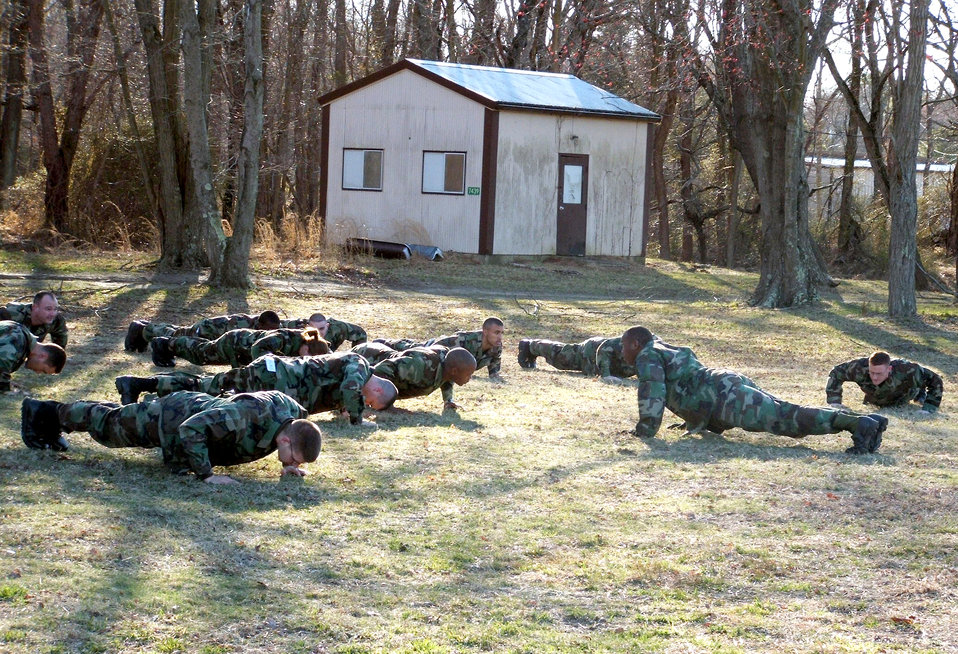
Phoenix Raven

Students in Air Force Phoenix Raven Class 06-D do push-ups on Monday, March 27, 2006, at Fort Dix, N.J. The students include Air Force security forces and U.S. Navy masters at arms personnel; they receive training in combat first aid, tactical self defense and aircraft security and undergo extensive physical training. The course is taught by the Air Mobility Warfare Center's 421st Combat Training Squadron.